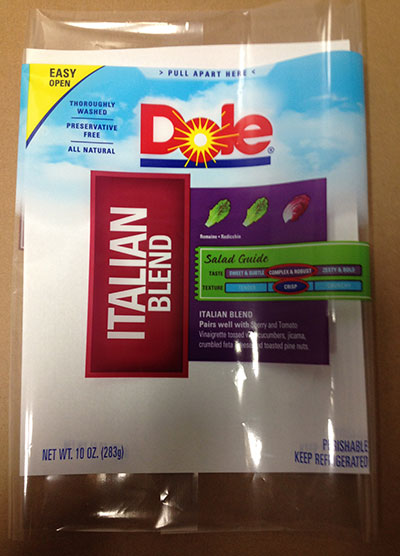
RECALLED – Variety of Bagged salads

March 13, 2014 – Product Recall – Dole Fresh Vegetables Voluntarily Recalls Limited Number of Bagged Salads Due to Possible Health Risk.